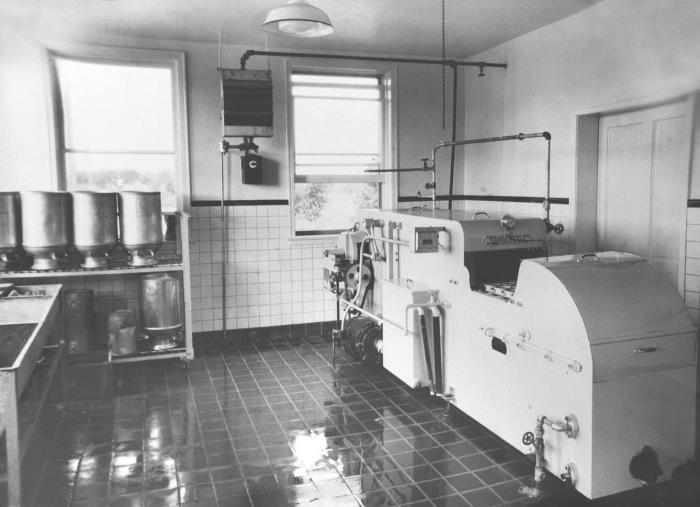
This historic 1940 photograph revealed the interior of a milk pasteurization plant that was part of a Wabasha, Minnesota dairy.